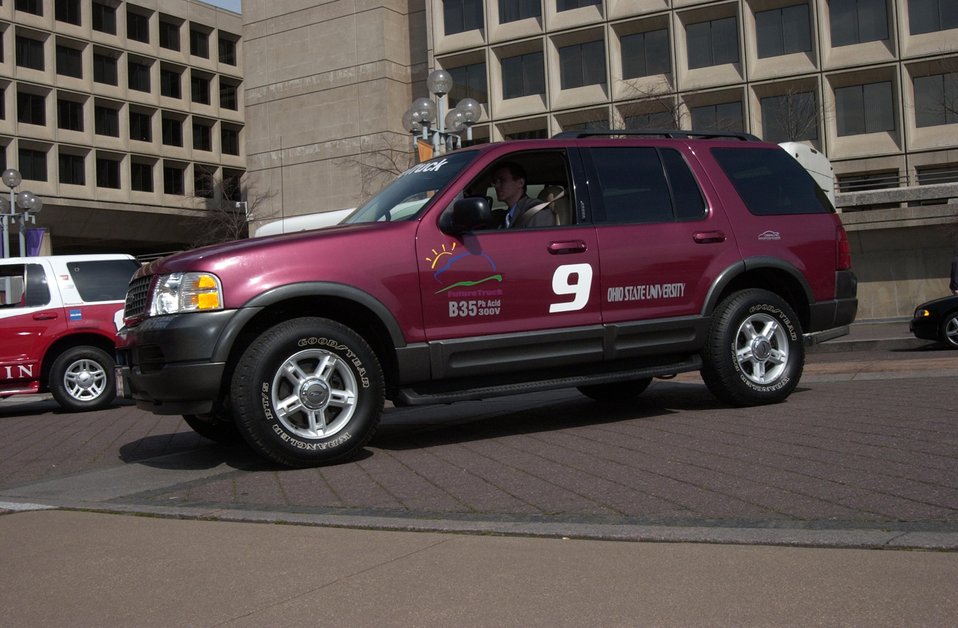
THE OHIO STATE UNIVERSITY RE-ENGINEERED SUV PARTICIPATING IN THE FUTURE TRUCK 2004 EVENT.

ON MARCH 24, 2004, SECRETARY OF ENERGY ABRAHAM AND THE FORD MOTOR COMPANY HOSTED SEVEN STUDENT DESIGNED ENERGY EFFICIENT SPORT UTILITY VEHICLES (SUVS) PARKED OUTSIDE OF DOE HEADQUARTERS IN WASHINGTON, DC. THE STUDENT TEAMS, PART OF THE FUTURE TRUCK 2004 ENGINEERING COMPETITION, RE-ENGINEERED FORD EXPLORERS TO ACHIEVE LOWER-EMISSIONS AND AT LEAST 25% HIGHER FUEL ECONOMY, WITHOUT SACRIFICING PERFORMANCE, UTILITY AND SAFETY. THE UNIVERSITIES THAT PARTICIPATED WERE OHIO STATE, PENN STATE, MARYLAND, TENNESSEE, WISCONSIN-MADISON, VIRGINIA TECH AND WEST VIRGINIA.